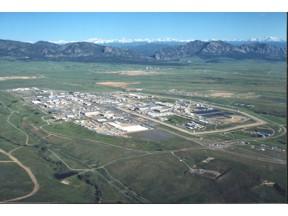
Rocky Flats Site

An aerial photo of the Rocky Flats Site located in Colorado before cleanup activities had begun. The site was completed in 2006.